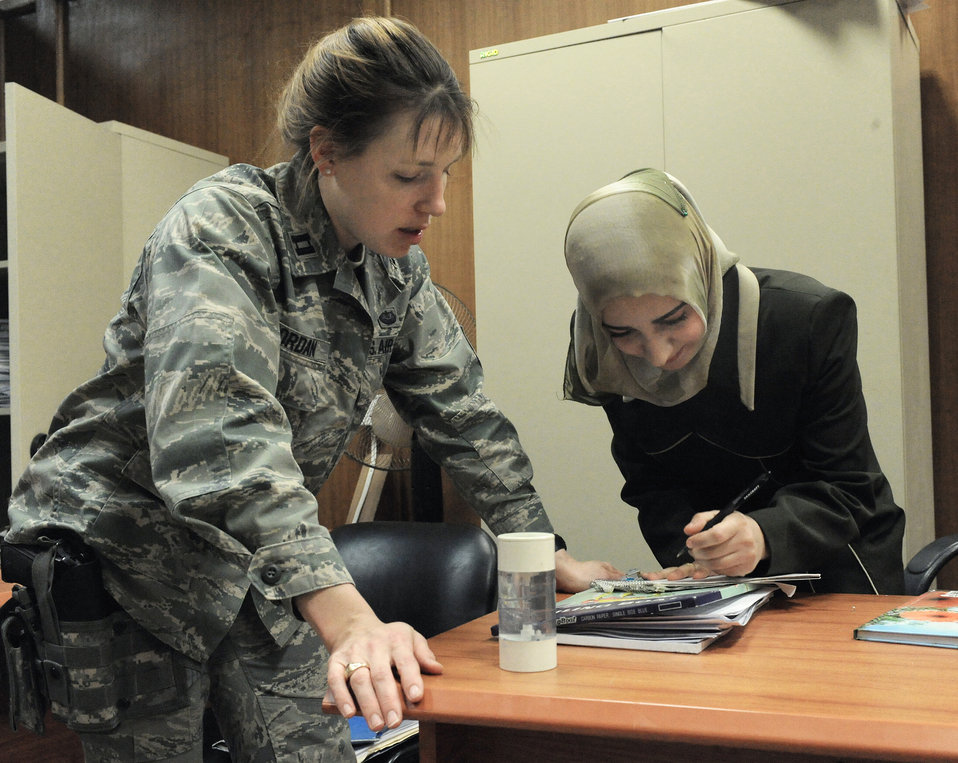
Airmen support the Central Criminal Court of Iraq

Capt. Karen Jordan and Iraqi investigator Athra'a look over legal files March 3 in Baghdad, Iraq. The investigators collect evidence and witnesses for trials. Captain Jordan is a lawyer for the 732nd Central Criminal Court of Iraq. She is a native of Raleigh, N.C., and deployed from Langley Air Force Base Va.